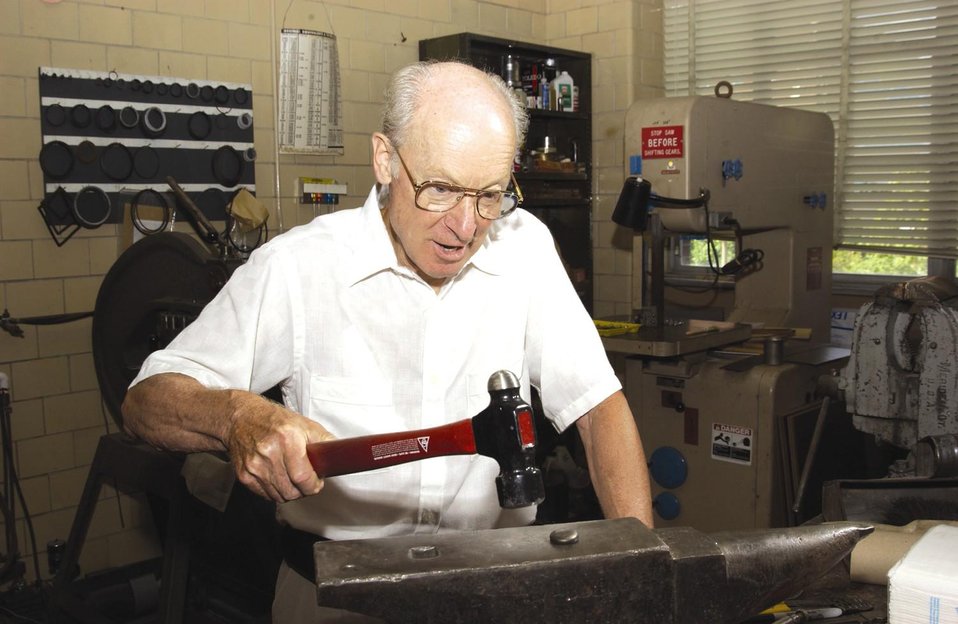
AMES LAB SENIOR METALLURGIST DEMONSTRATES DUCTILITY OF A BUTTON OF YTTRIUM-SILVER (YAG), AN INTERMETALLIC MATERIAL.

INTERMETALLIC MATERIALS -- COMPOUNDS CONSISTING OF TWO OR MORE METALS BONDED TOGETHER -- POSSESS CHEMICAL, PHYSICAL, ELECTRICAL, MAGNETIC AND MECHANICAL PROPERTIES THAT ARE OFTEN SUPERIOR TO ORDINARY METALS. THEIR USEFULNESS HAS BEEN LIMITED UP TO NOW, BECAUSE THEY WERE FOUND TO BE BRITTLE AT ROOM TEMPERATURE. RESEARCHERS AT AMES LAB HAVE RECENTLY IDENTIFIED MORE THAN A DOZEN RARE EARTH/MAIN GROUP METAL INTERMETALLIC COMPOUNDS THAT SHOW HIGH LEVELS OF DUCTILITY AT ROOM TEMPERATURE, MAKING THESE MATERIALS MORE USEFUL.